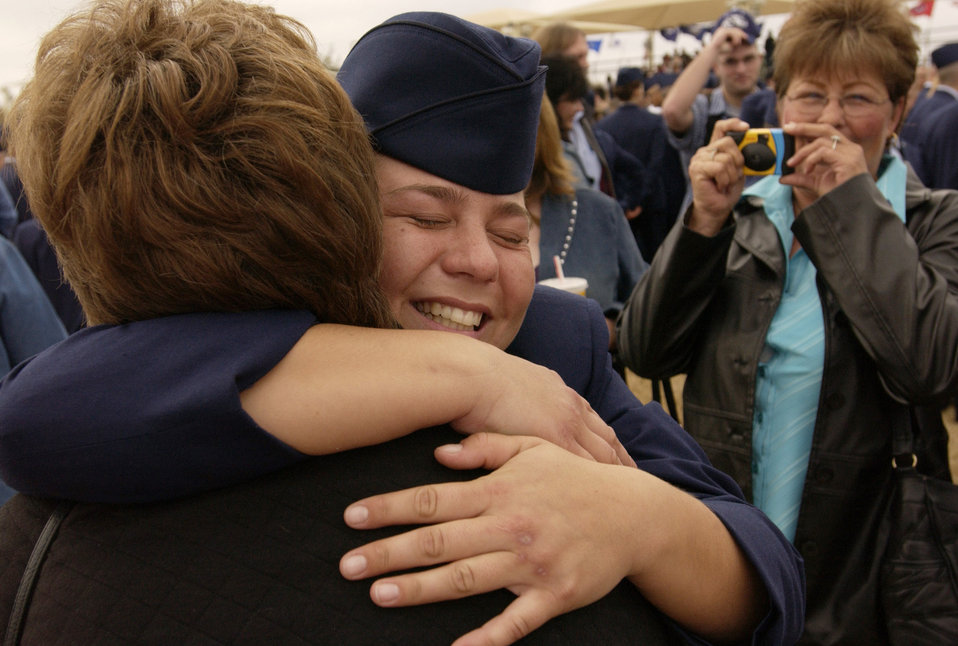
Graduation day

LACKLAND AIR FORCE BASE, Texas -- Airman Ashlee Lenczewski hugs her aunt, Debbie Barton of Las Vegas, while her mother takes a picture. She was one of 961 trainees to graduate basic military training during the last graduation ceremony for 2005.